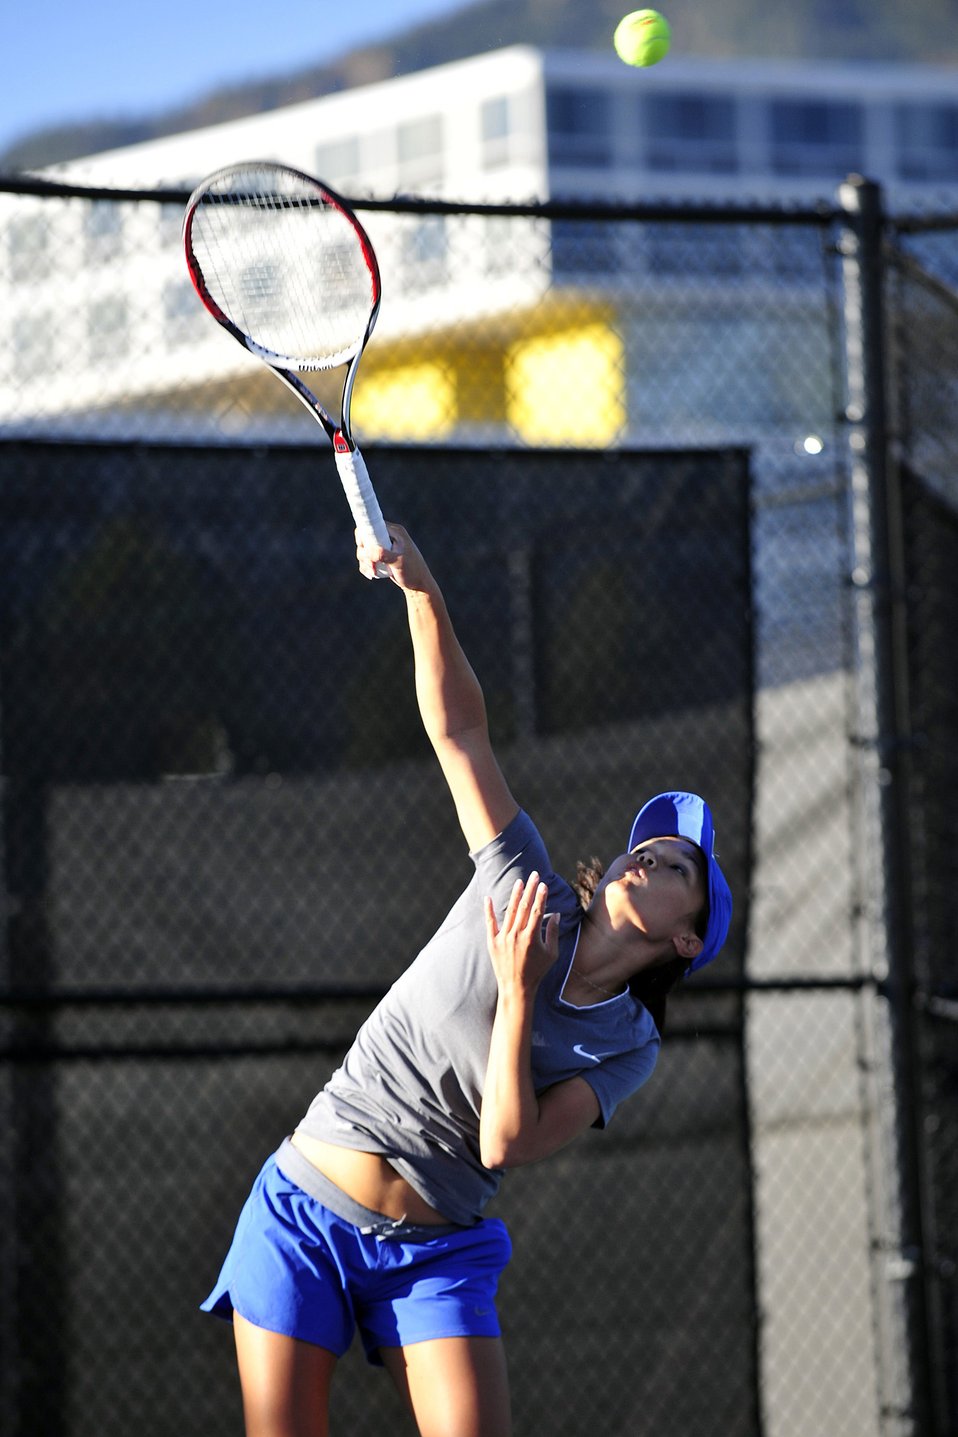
Cadets compete in tennis tournament

Falcons senior Christen Monreal serves during the